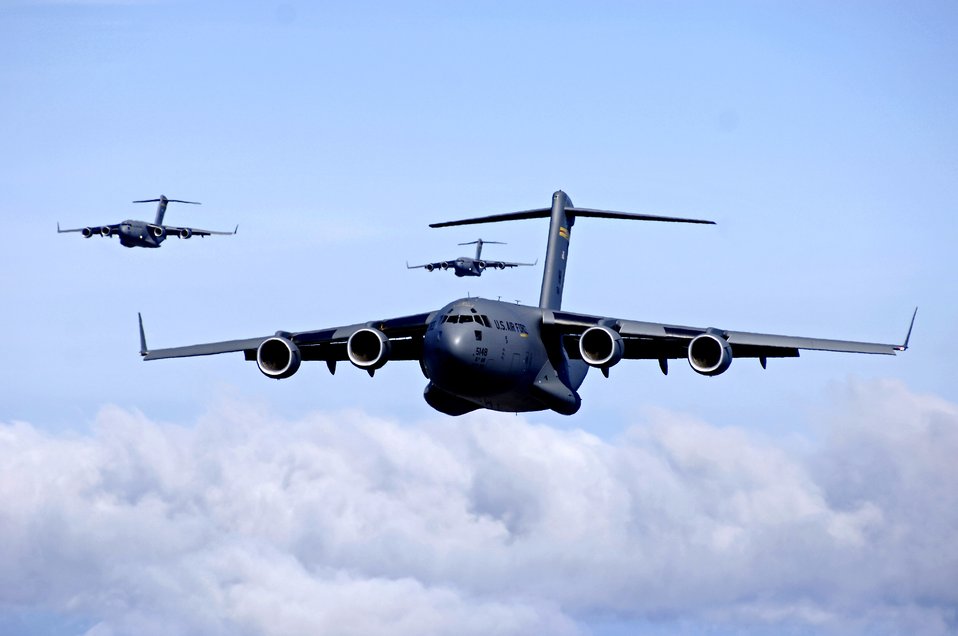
C-17 Globemaster III celebrates 16 years of flight

C-17 Globemaster IIIs provide intra-theater heavy airlift support, helping to sustain operations throughout Afghanistan, Iraq and the Horn of Africa.